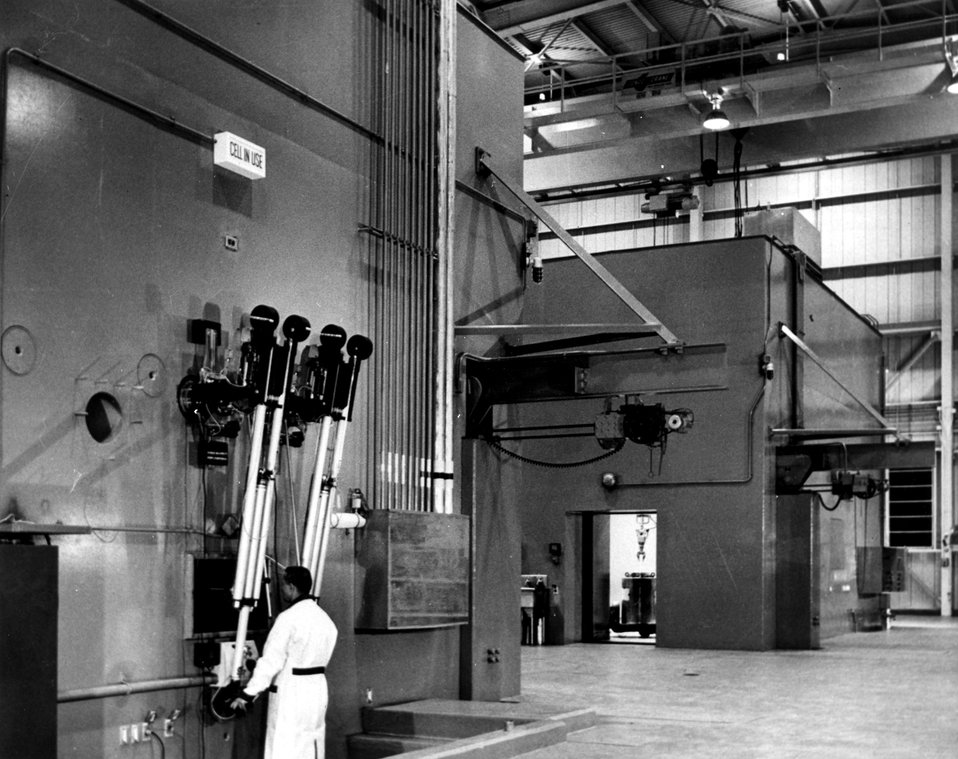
Remote control methods for moving and using highly radioactive sources have been adopted by industries having dangerous materials to handle.